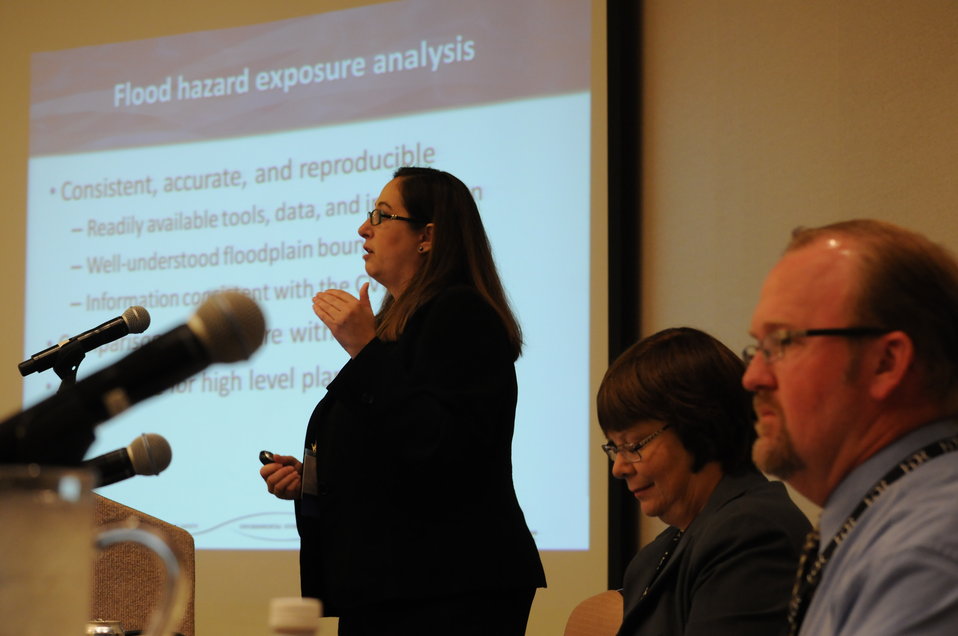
Floodplain Management Association conference 2012

U.S. Army Corps of Engineers Sacramento District water resources planner Kim Carsell (left) and Jason Sidley with the California Department of Water Resources (right) explain preliminary findings and recommendations of California’s Flood Future Report at the Floodplain Management Association’s annual conference, held in Sacramento, Calif., Sept. 4-7, 2012. Judy Soutiere (center), also with the Corps’ Sacramento District, moderated a workshop on the report. The report is a collaboration between the Corps and DWR, and assesses the flood risk to lives and property for the entire state. “One of the problems is the small fraction of funding spent on flood management compared to wastewater management and water supply,” said Sidley. Some 7.2 million Californians currently live in a floodplain, according to the report, which is scheduled to be co-published by DWR and the Corps in early 2013. That includes more than 3 million people in the southern coastal portion of the state, over 1 million in the San Francisco area, and just under 1 million in the Sacramento River region. “Everyone in California is at risk – whether or not you live in a floodplain,” said Carsell, “and the impact of a devastating flood here will reach far beyond the state’s boundaries.”